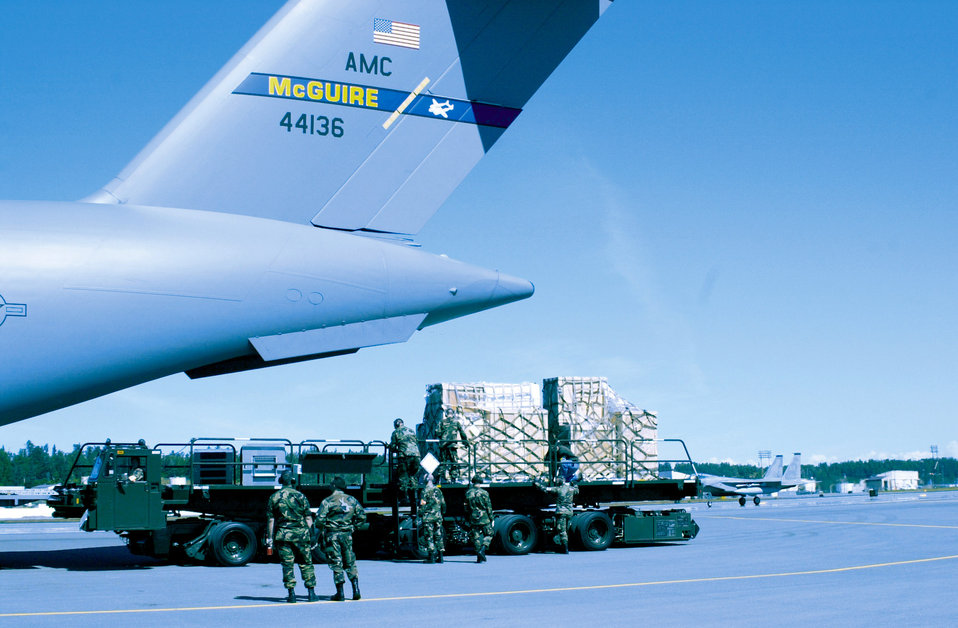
Simulator to help prepare Elmendorf pilots for C-17s

Airmen from Elmendorf Air Force Base, Alaska, and McGuire AFB, N.J., unload a new C-17 Globemaster III simulator at Elmendorf. The C-17 is replacing Elmendorf's aging fleet of C-130 Hercules and will be flown by the 517th Airlift Squadron when they arrive next year.